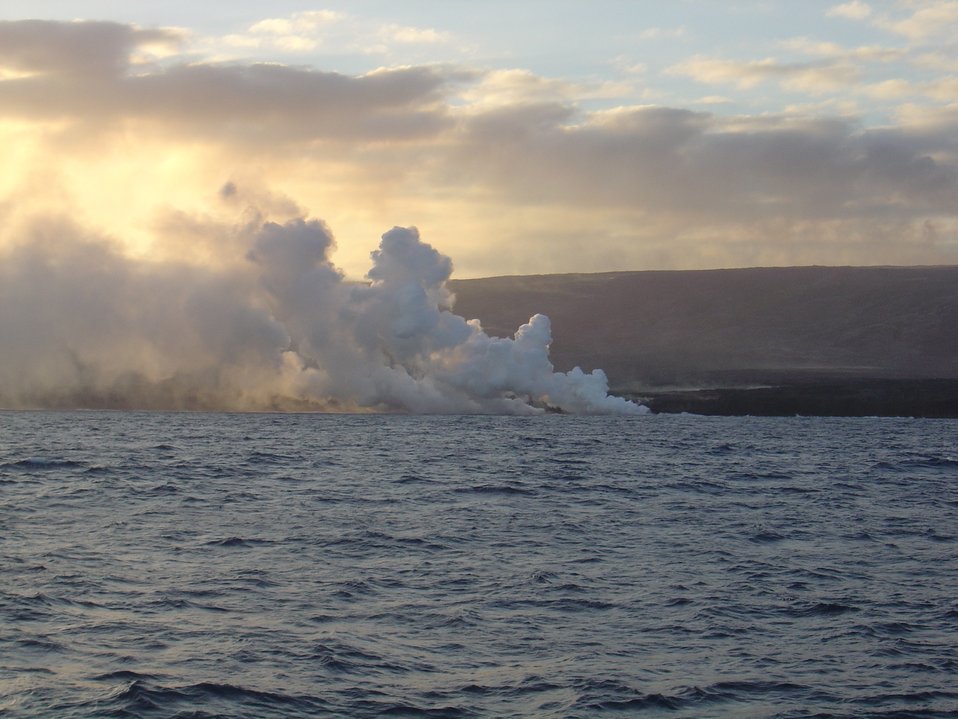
Lava flow entering the sea on SE coast of Hawaii.